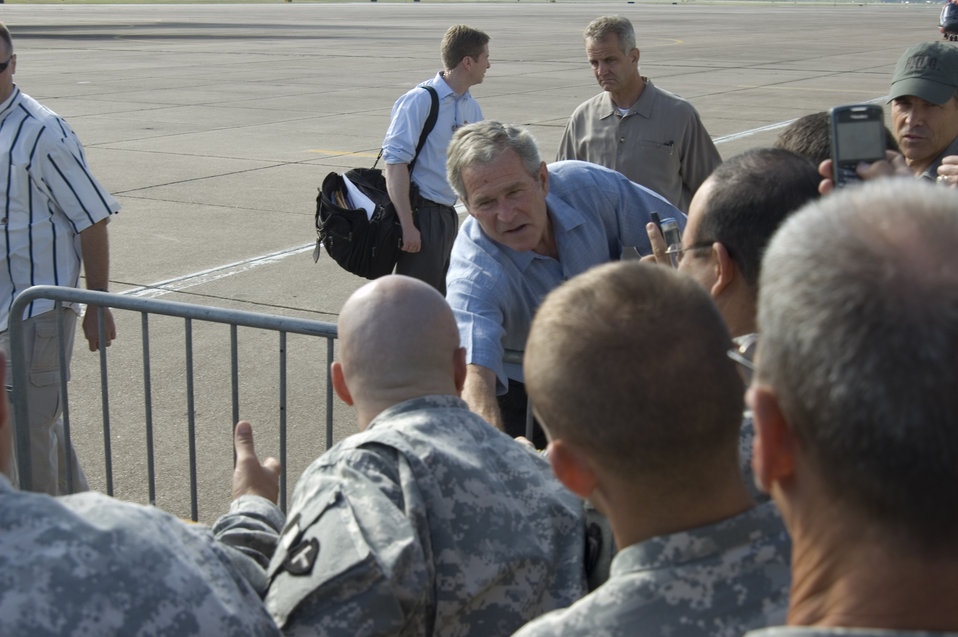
President Bush greets servicemembers supporting Ike relief

President George W. Bush shakes hands with military members Sept. 16 at Ellington Field, Texas, before assessing the damage from Hurricane Ike from the Marine 1 helicopter around the Gulf Coast. Active duty, Reserve and Guard servicemembers are assisting with the relief effort after the storm ravaged the region.